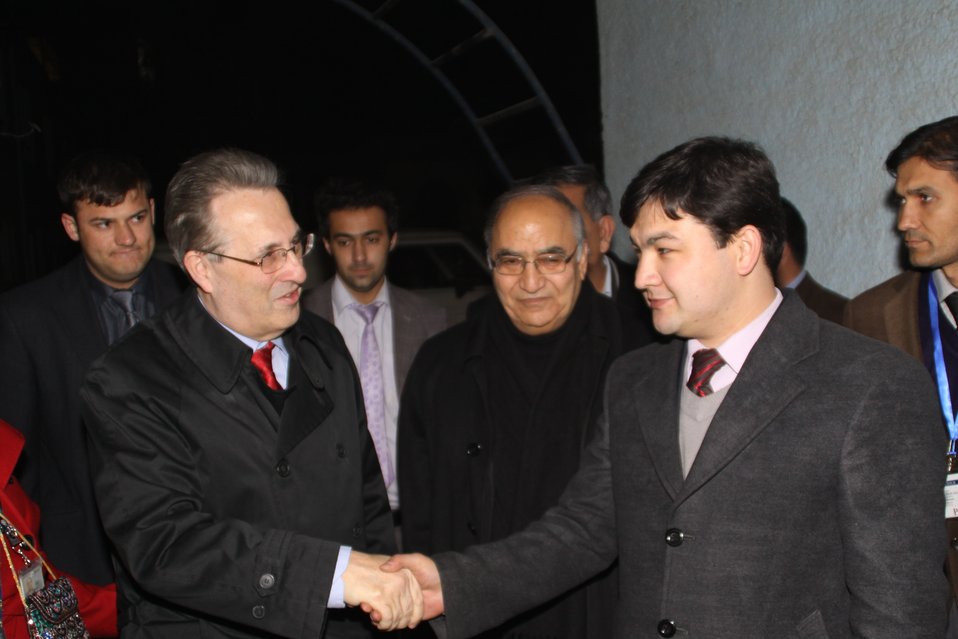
U.S. Ambassador E. Anthony Wayne